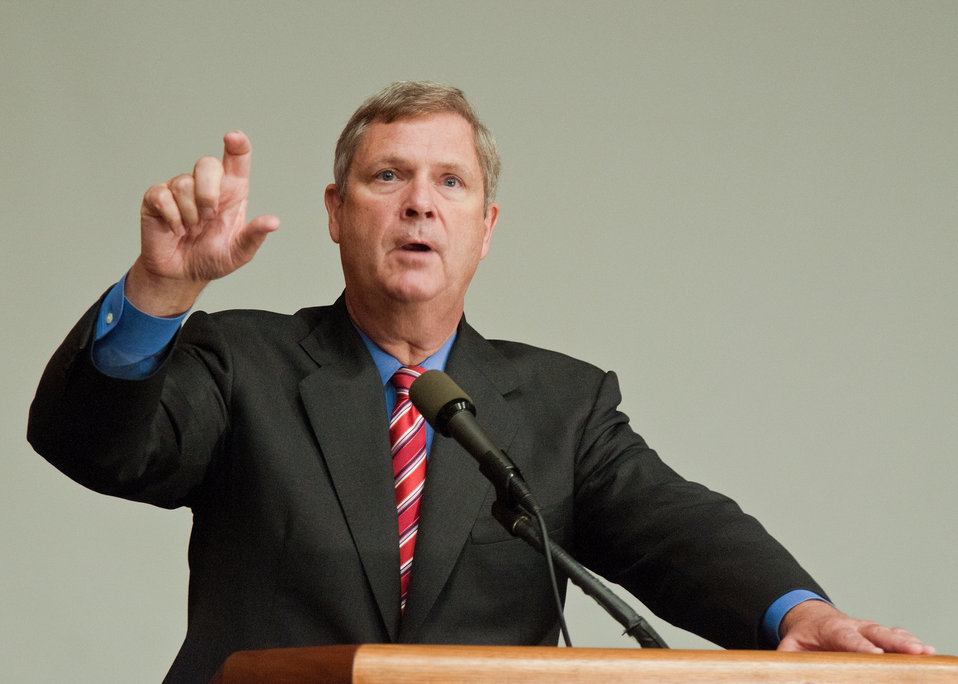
Agriculture Secretary Tom Vilsack spoke to the National Farmer’s Union on the economy of American agriculture during their annual Fall Legislative Fly-In at the U.S. Department of Agriculture in Washington, D. C. on Monday, Sept. 12, 2011.